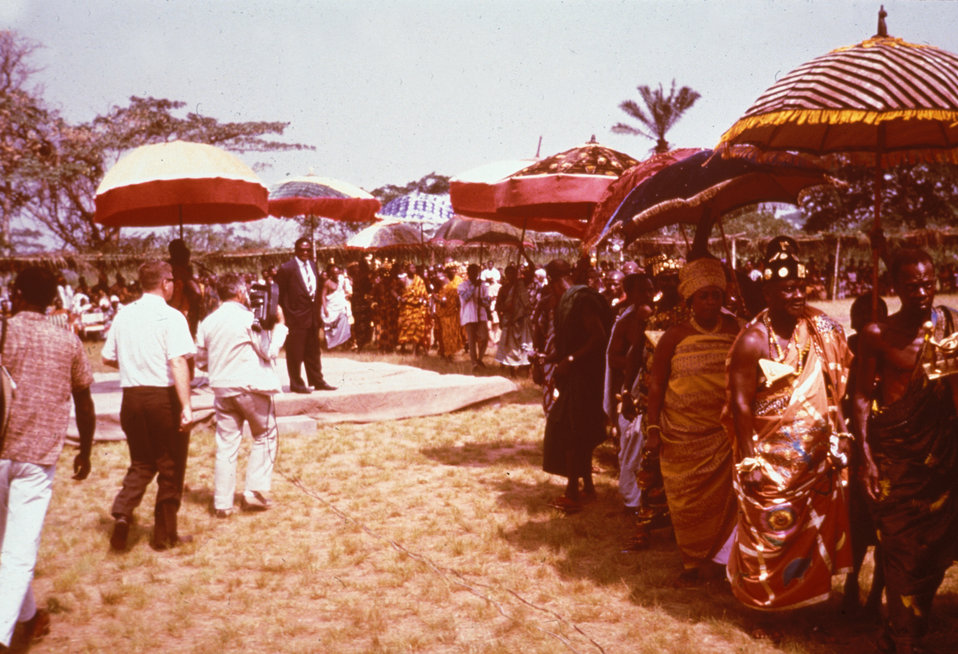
These West African chiefs were preparing to greet visitors during a smallpox eradication ceremony in 1975.